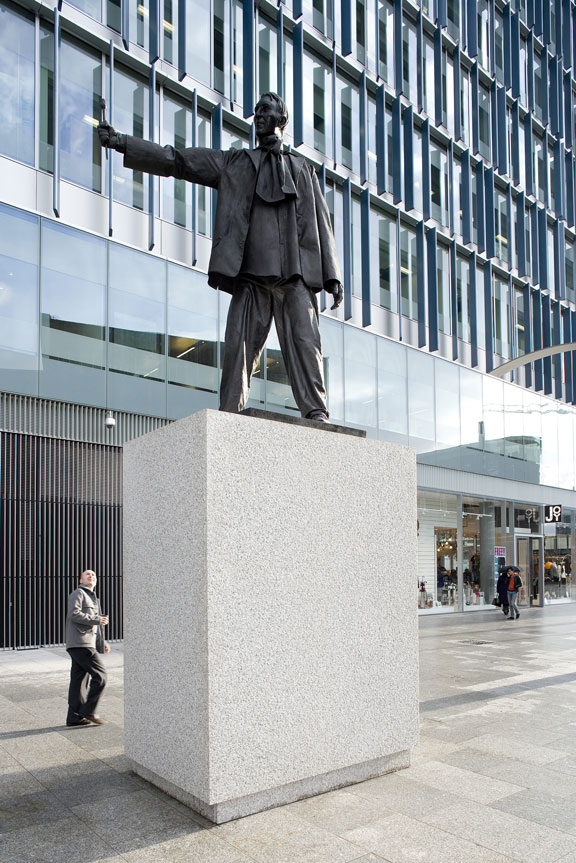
'the monument' - England.